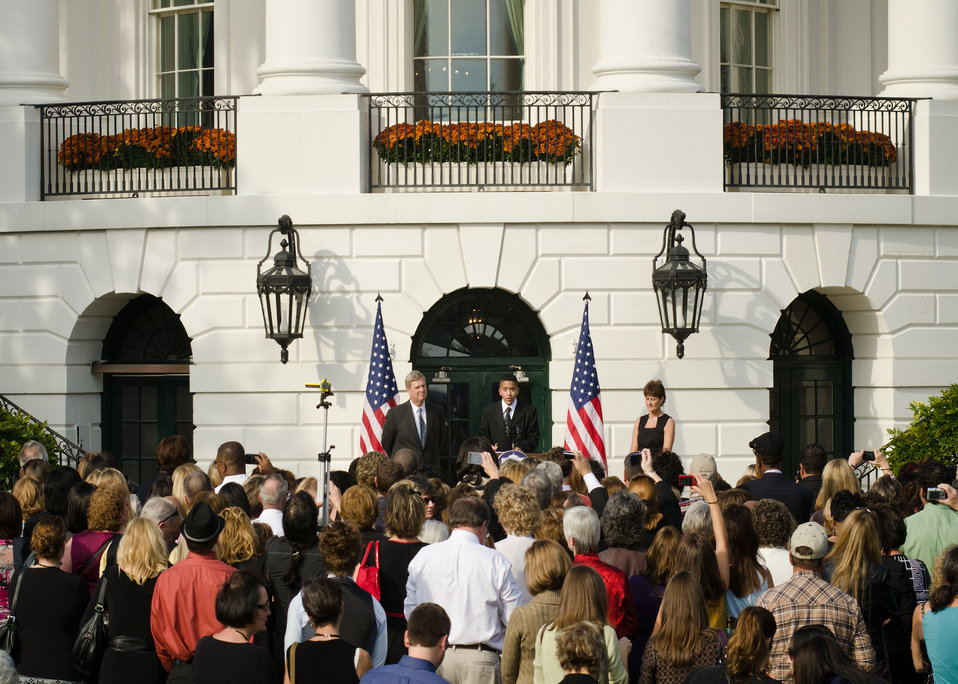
Alex Roman, Walsh Elementary School, Chicago, Illinois explained how he is eating healthier meals and exercising more due to the HealthierUS Schools Challenge prior to introducing First Lady Michelle Obama at a reception on the South Lawn of the White House in Washington, DC, on Monday, October 17, 2011 to honor the winners of the HealthierUS Schools Challenge. Behind Roman from the left are Agriculture Secretary Tom Vilsack, and Becky Bounds, Lamar County Schools, Mississippi. Agriculture Secretary Tom Vilsack and First Lady Michelle Obama hosted the reception to honor the over 1200 winners in the HealthierUS Schools Challenge that met the First Lady’s goal to double the number of participants in the HealthierUS School Challenge in a year. In February 2010, First Lady Michelle Obama introduced “Let’s Move” incorporating the HealthierUS School Challenge into her campaign to promote a healthier generation of children. The HealthierUS School Challenge recognizes elementary, middle and high schools nationwide that create healthier school environments by providing exceptional nutrition education, nutritious food and beverage choices, physical education and opportunities for physical activity. Since the beginning of the HealthierUS School Challenge in 2004, awards have been given to schools in 44 states. As of September 28, 2011, there are 1631 schools certified. A tool kit on how to become a Healthier U.S. School can be found at www.fns.usda.gov.